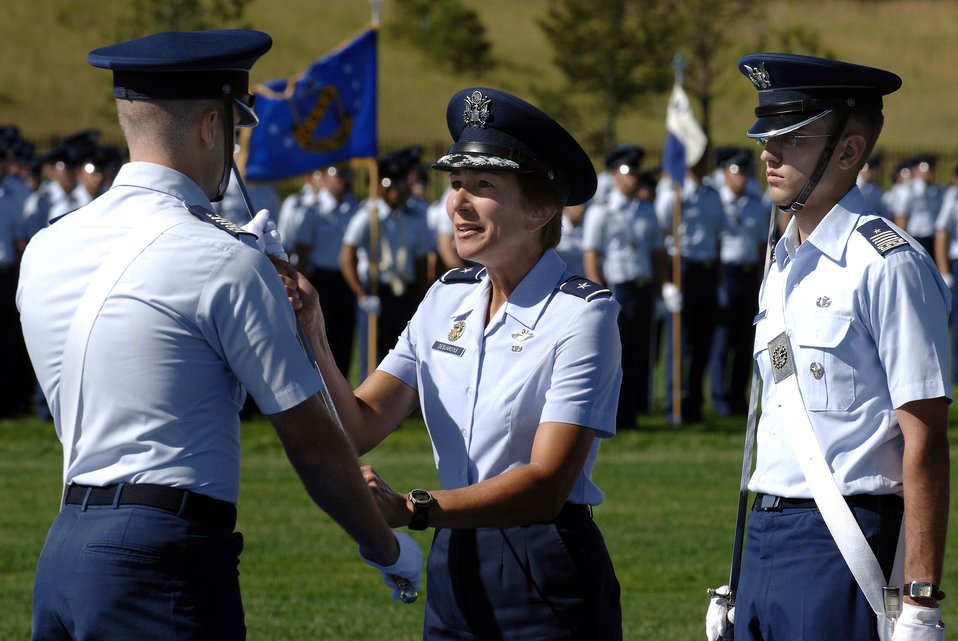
Acceptance Parade for Class of 2011

Brig. Gen Susan Y. Desjardins, commandant of cadets, officiates the cadet change of command ceremony Aug. 8 on the Stillman Parade field at the U. S. Air Force Academy in Colorado Springs, Colo., during the Acceptance Parade. The Acceptance Parade marks the formal acceptance of the new cadets into the cadet wing.